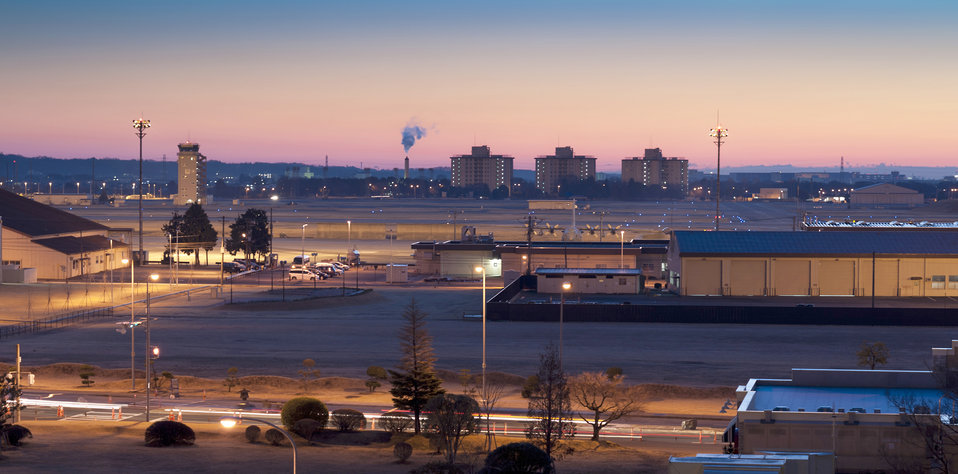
Operational Readiness Exercise

A view of the sunrise for Yokota residents during the early morning hours on the final day of an Operational Readiness Exercise here March 11. During the week-long exercise, participants practiced contingency operations to prepare them should they be called to support operations in a wartime environment.